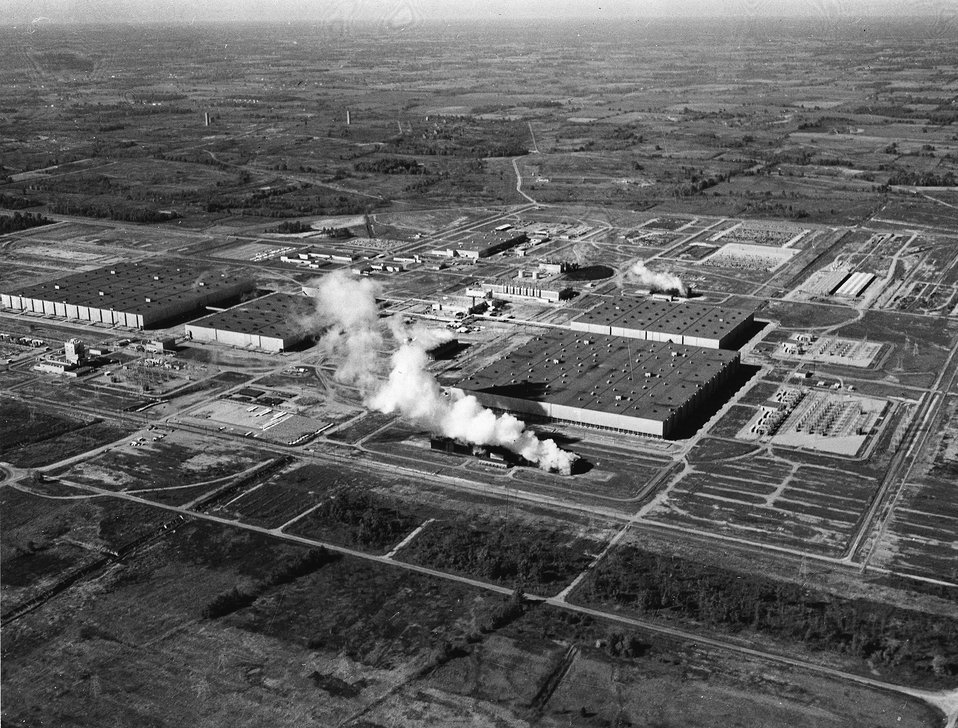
The Atomic Energy Commission's sprawling gaseous diffusion plant near Paducah, Kentucky. c. 1964